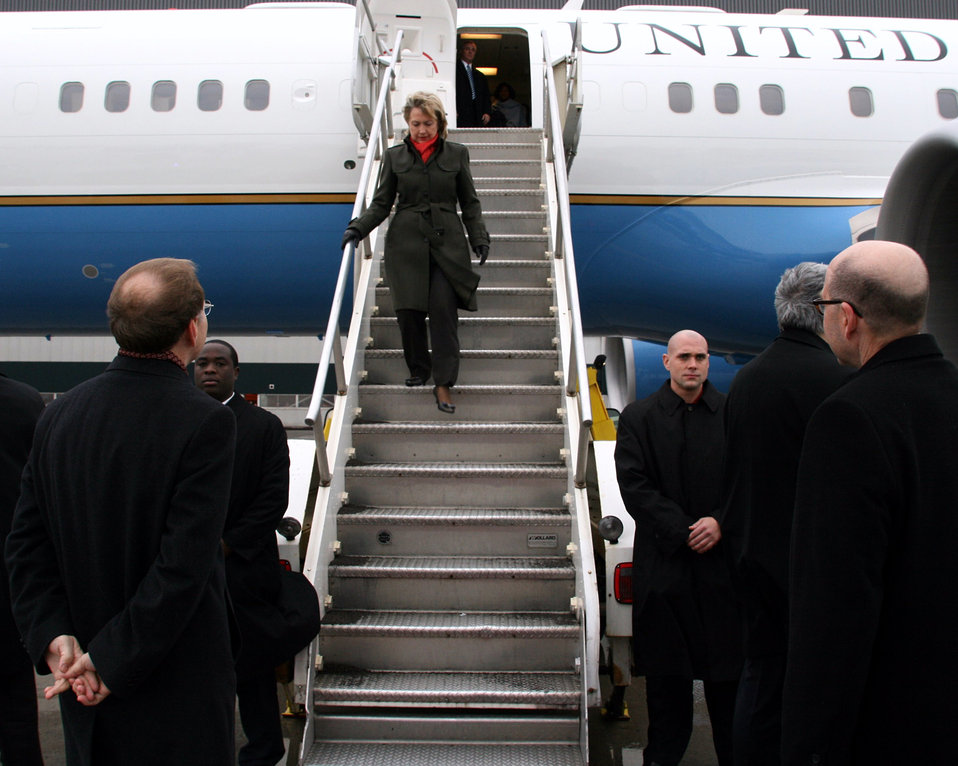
Secretary Clinton in Montreal

U.S. Secretary of State Hillary Rodham Clinton arrives in Montreal, Canada to attend meetings regarding the Haiti Earthquake hosted by the Government of Canada in Montreal Canada January 25, 2010.